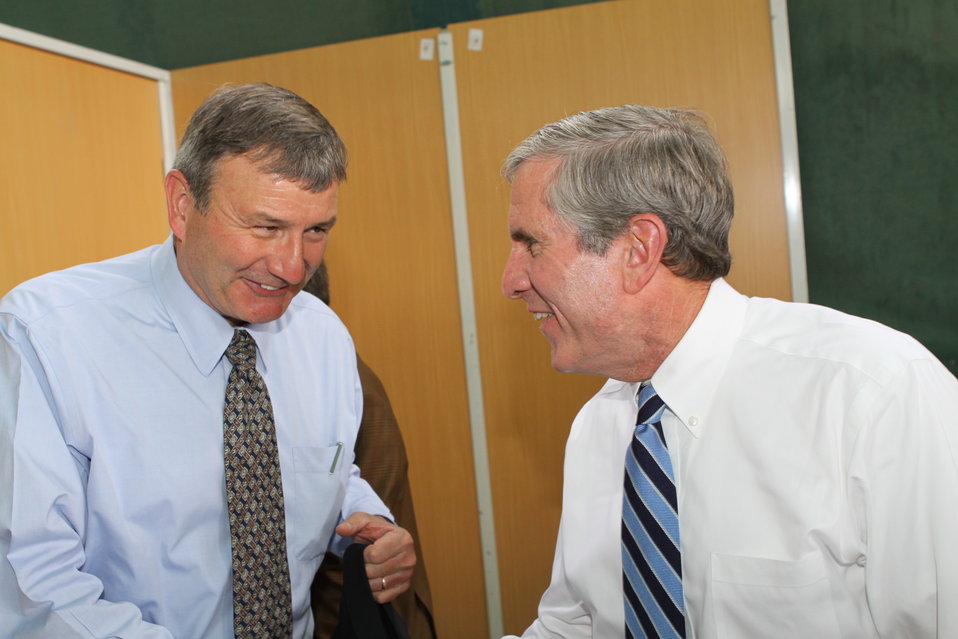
100525 Hirat Marble Conference 558